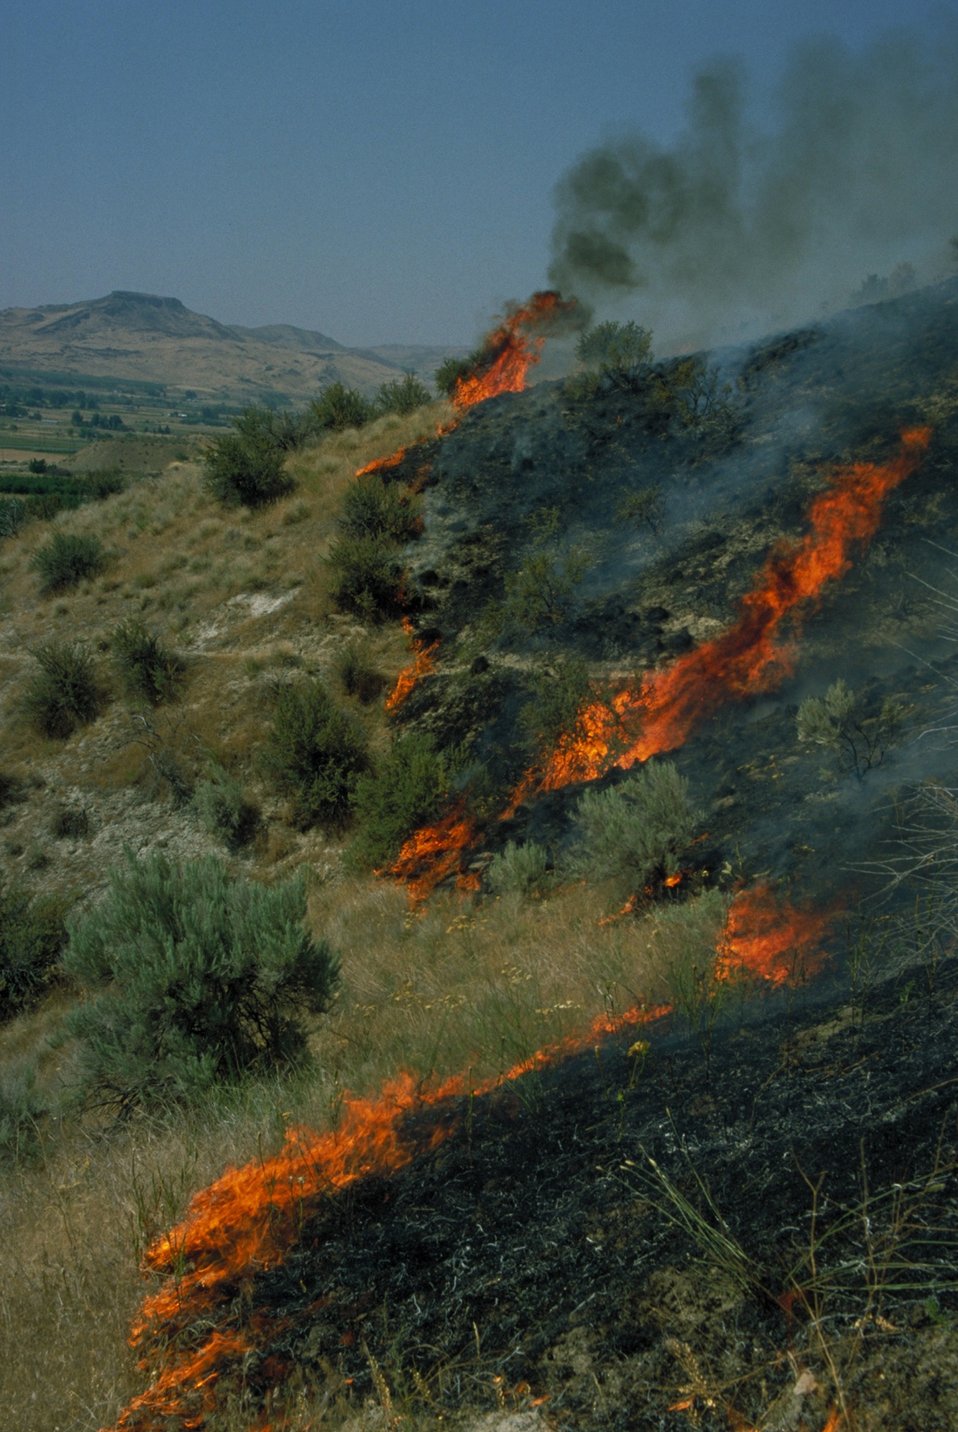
Prescribed burn Fire Season 2000 Lower Snake River District LSRD